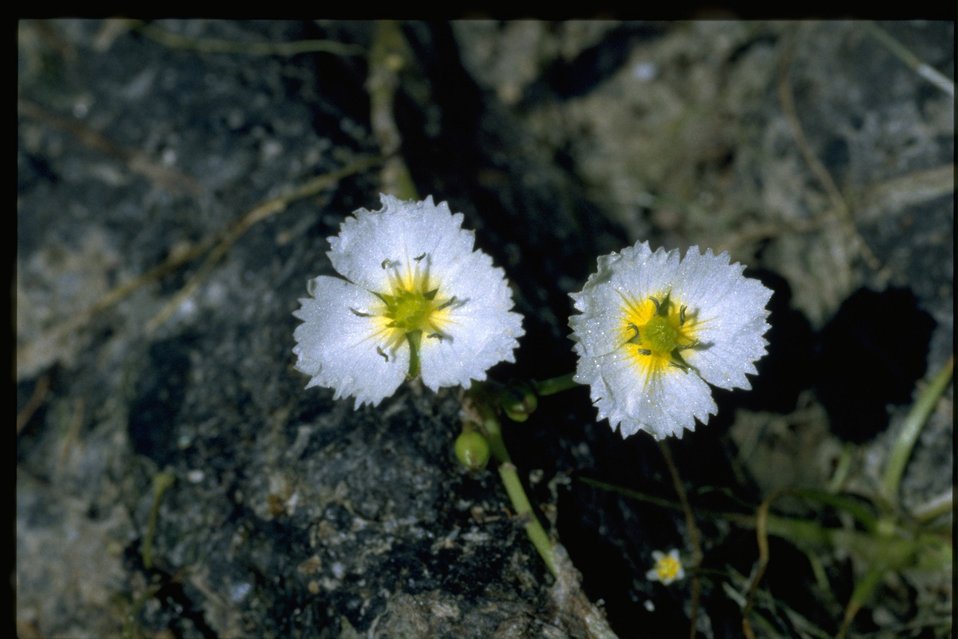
Medium shot of Fringed Water Plantain wildflowers.